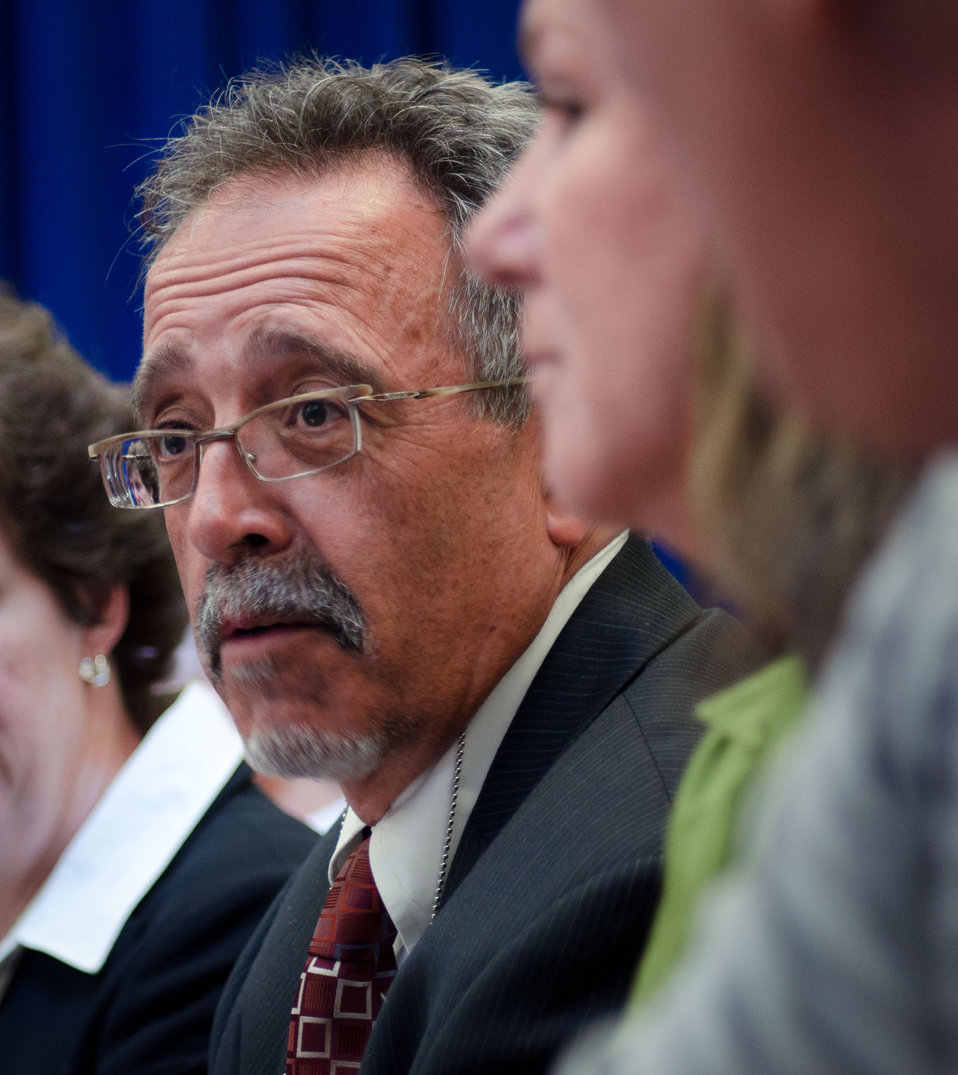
Mr. Bruce Ward of Pine, CO, attended a meeting at the White House, in Washington, DC, on July 6, 2011. He was asked to participate along with President Barack Obama, Agriculture Secretary Tom Vilsack, the President's Domestic Policy Adviser Melody Barnes and rural communities leaders from across the country for the White House Rural Champions of Change event to strengthen rural communities and promote economic growth. Ward was selected for the nonprofit organization Choose Outdoors in 2008 to bring together the diverse outdoor recreation interests that enjoy the National Forests and Grasslands. The recreation constituency is composed of industry, enthusiast, and advocacy groups that span the spectrum from highly developed activities like alpine skiing, to motorized-based travel uses, and nonmotorized, traditional activities like hunting, hiking, and equestrian use. These interests have a history of competitiveness and conflict both on the ground and in policy issues.